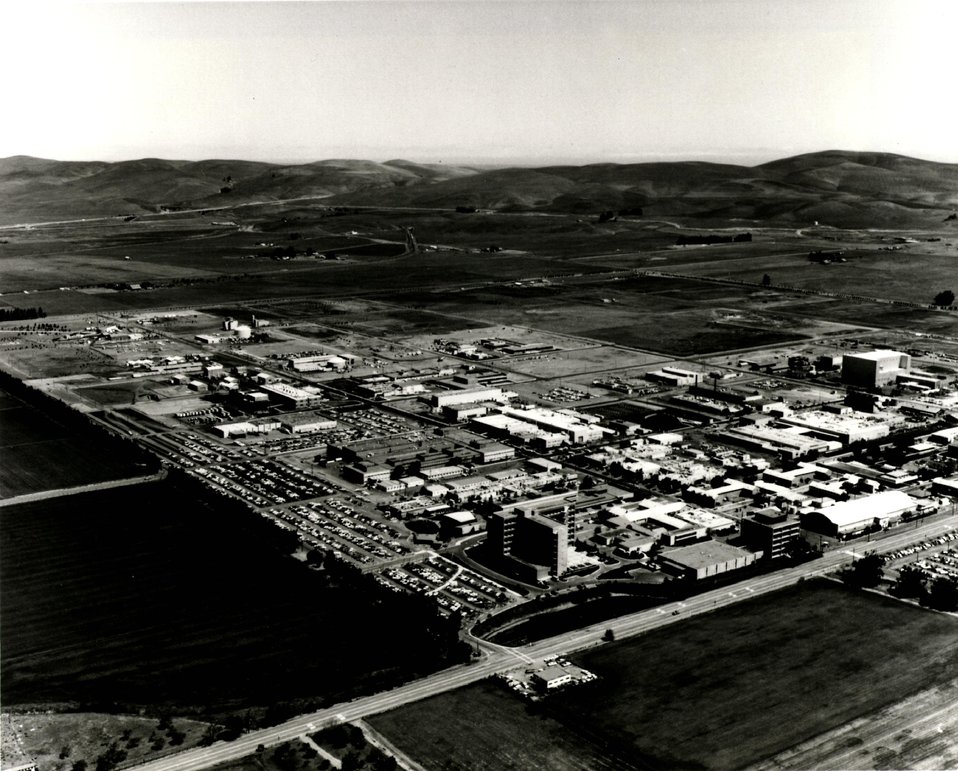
5,500 employee research and development facility operated by the University of California under a contract with the U.S. Department of Energy (DOE). Devoted to the achievement of specific technical goals through multi-disciplinary team efforts. Circa 1975.